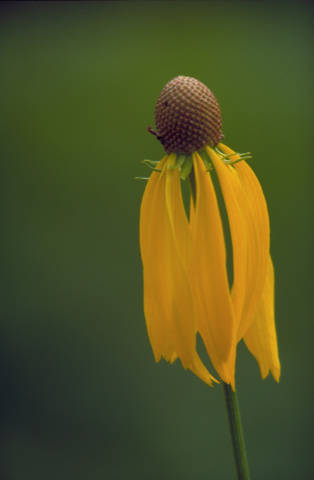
gray coneflower

(also known as yellow coneflower or prairie coneflower)